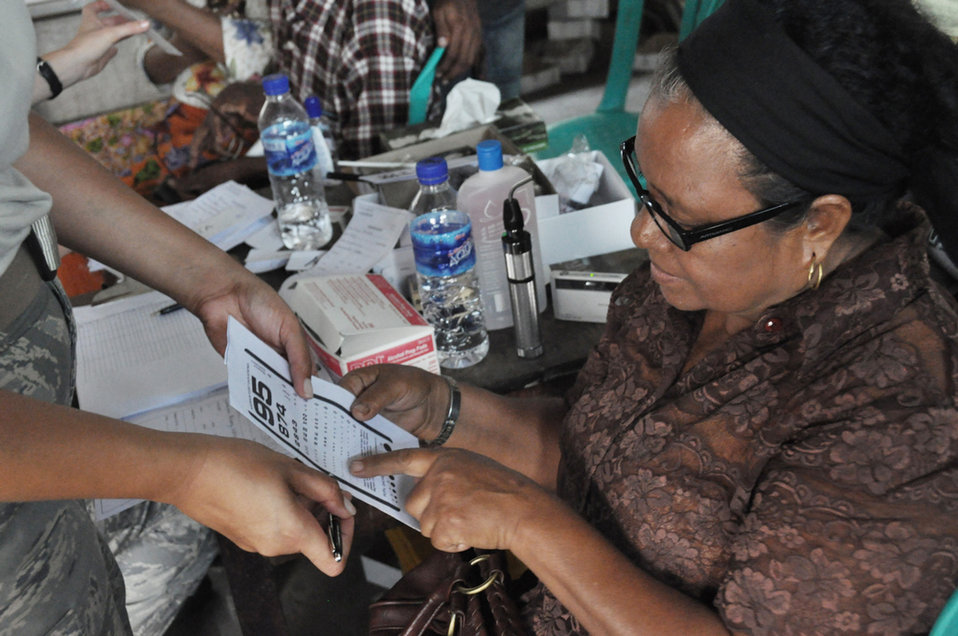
All eyes on total force Pacific Angel team

An East Timorese woman verifies her vision has improved with a new pair of glasses after being seen by Air Force eye specialists July 20 at a clinic in Dili, Timor Leste. The clinic was set up as part of Operation Pacific Angel 2009, a Pacific Air Forces humanitarian assistance operation in the Asia-Pacific region led by 13th Air Force at Hickam Air Force Base, Hawaii.